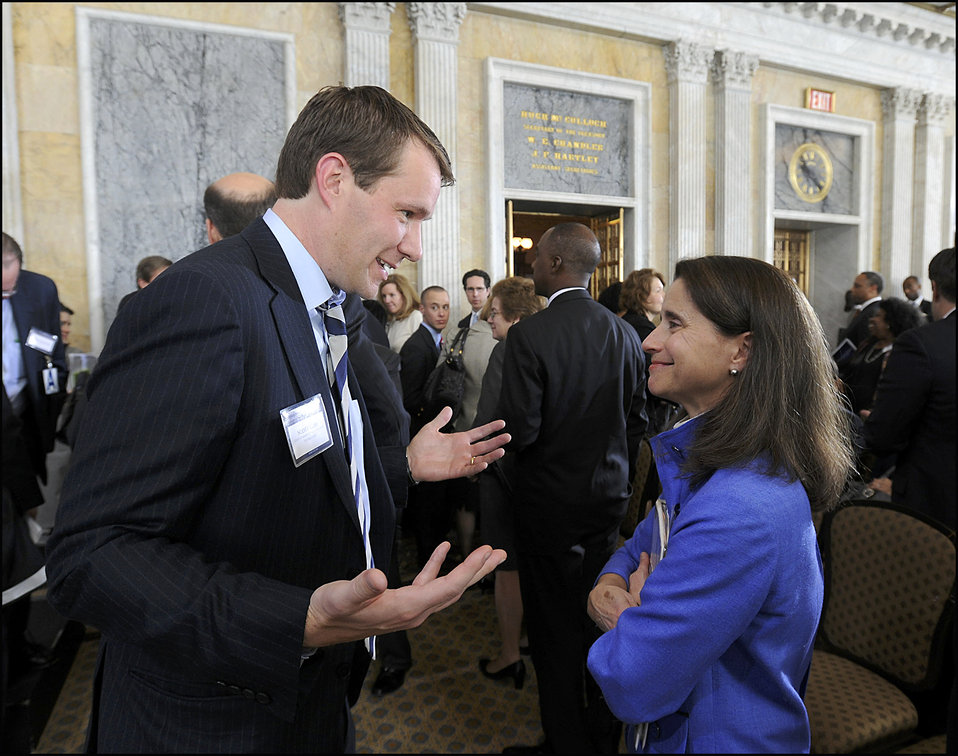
Access to Capital Conference

Scott Case, CEO of StartUp America and founder of Priceline, and Treasury Assistant Secretary for Financial Markets Mary Miller after the Access to Capital Conference concluded.